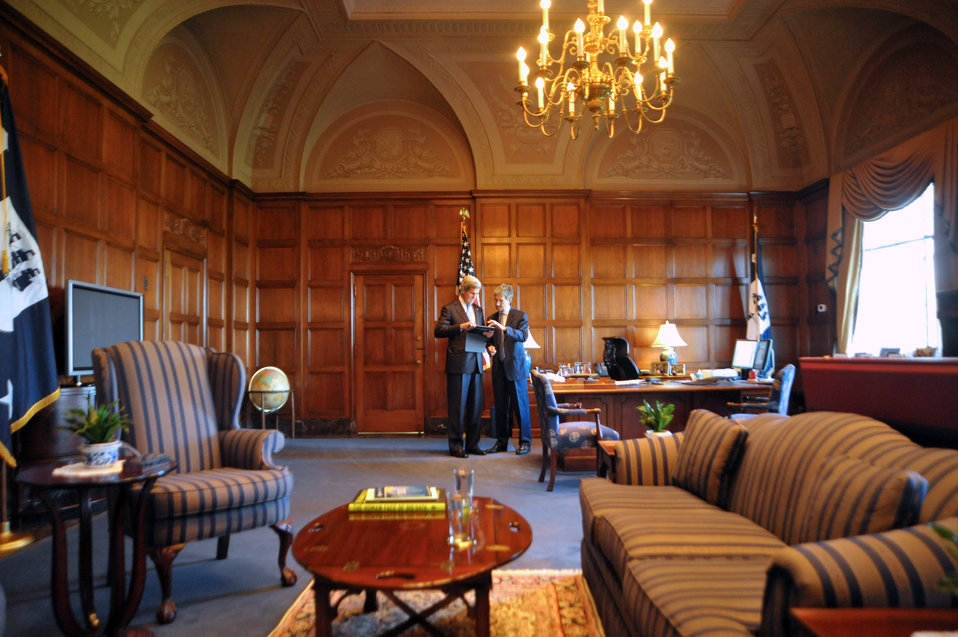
Secretary John Kerry Shares a Quiet Moment With His Brother, Acting Commerce Secretary Cameron Kerry

U.S. Secretary of State John Kerry and his brother, Acting U.S. Secretary of Commerce Cameron Kerry, share a quiet moment in the Commerce Secretary's office on June 21, 2013, during their brief joint tenure in the Obama administration Cabinet. Cameron Kerry, the General Counsel of the Commerce Department, was holding the job until Secretary-Designate Penny Pritzker was confirmed by the U.S. Senate.